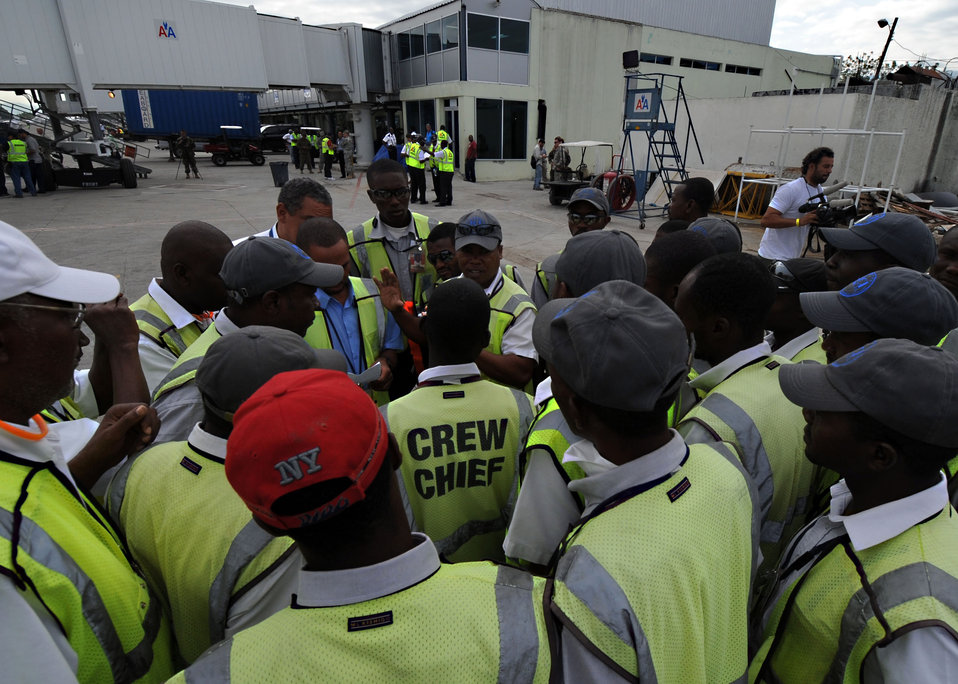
Haiti airport transitions, commercial flights begin

Ground crew and baggage workers gather together to prepare for commercial airline flights to land and depart Feb. 19, 2010, at Toussaint L'Ouverture International Airport in Haiti. The opening of commercial traffic is a significant step forward for the Haitian government after a massive earthquake damaged many parts of the Caribbean nation.